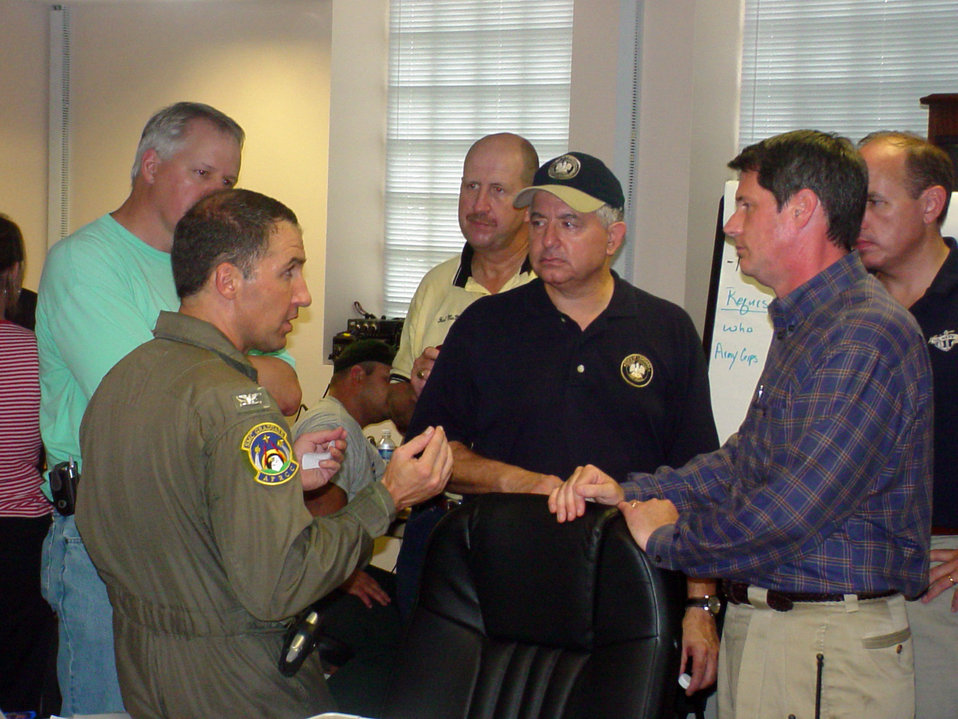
CAP helps hurricane relief efforts

Civil Air Patrol Col. Rock Palermo discusses Hurricane Rita relief operations in Lake Charles, La., with Chuck Kleckley, Louisiana state representative; Hal McMillin, Calcasieu Parish police jury president; Ronnie Johns, Louisiana state representative; and David Vitter, U.S. senator from Louisiana. Colonel Palermo spent nearly three weeks directing local emergency operations in his hometown of Lake Charles. He was drafted as operations section chief and later deputy director because of his past disaster management experience.